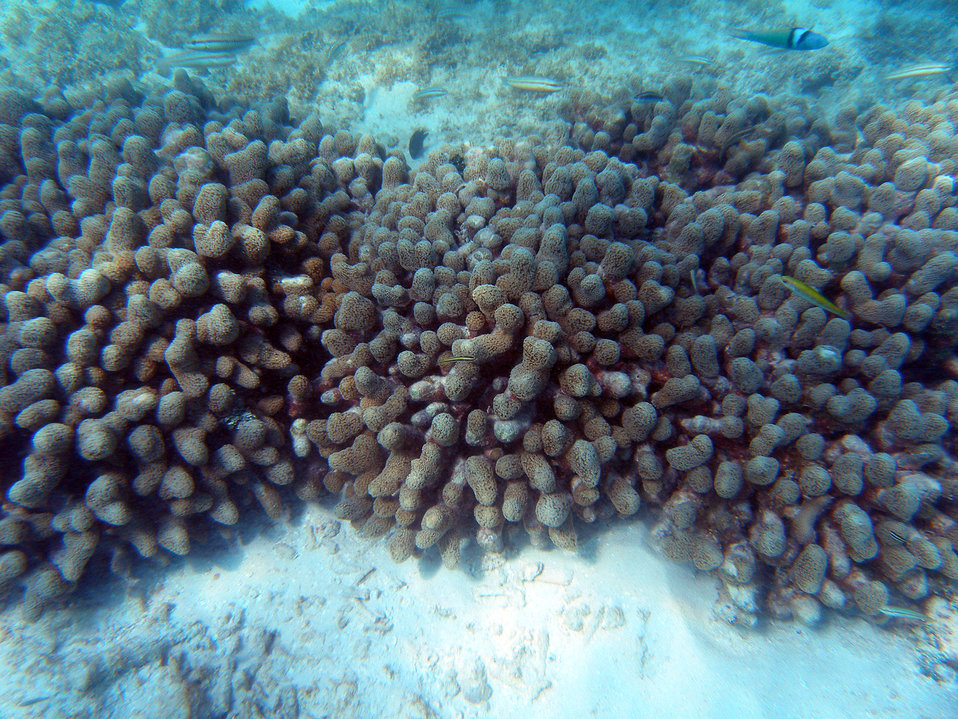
Reef scene